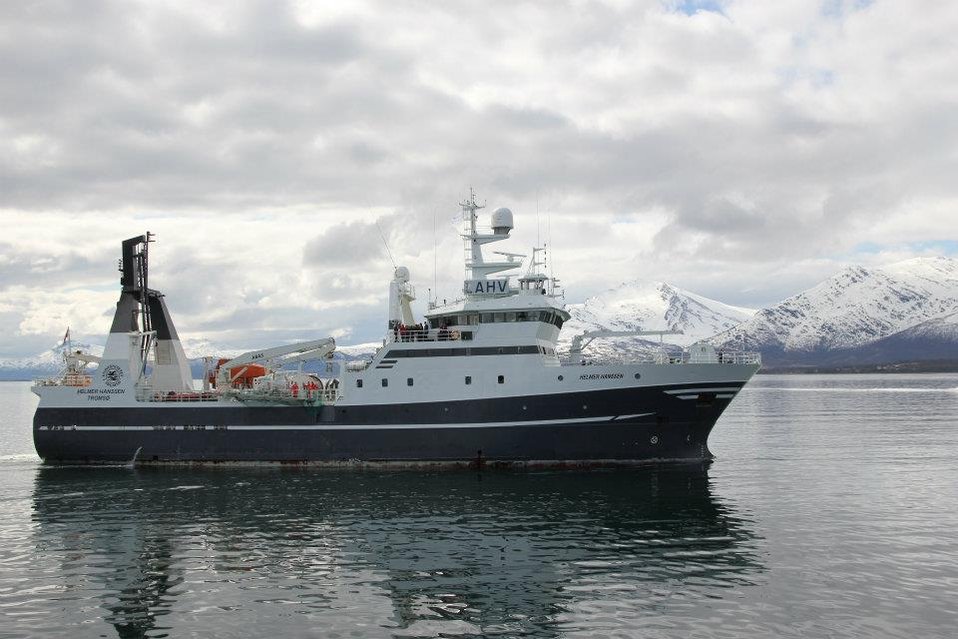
Secretary Clinton and Norwegian Foreign Minister Store Participate in an Arctic Research Vessel Tour

U.S. Secretary of State Hillary Rodham Clinton and Norwegian Foreign Minister Jonas Gahr Store participate in an Arctic research vessel tour in Tromso, Norway, on June 2, 2012.